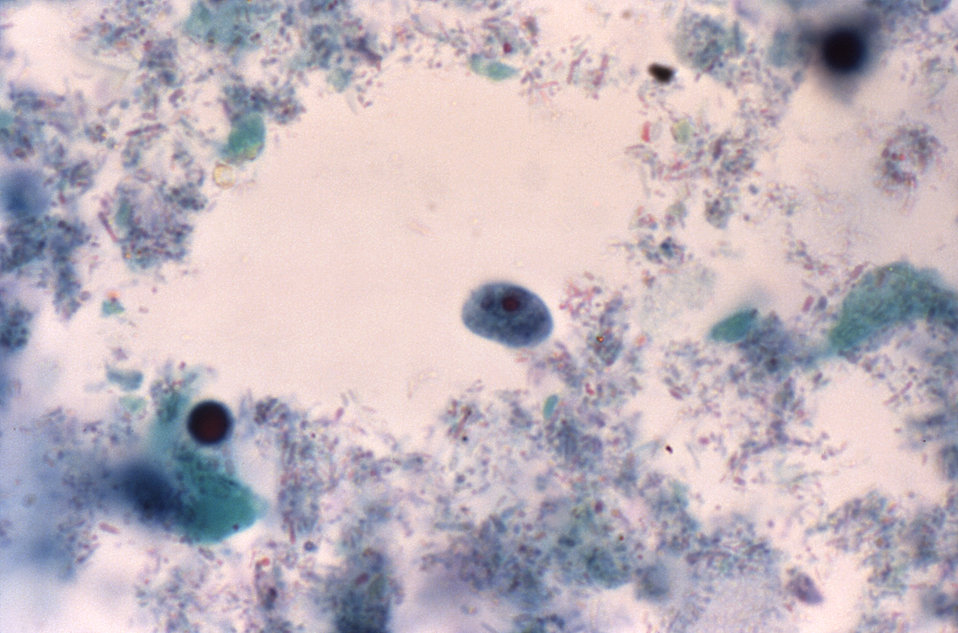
This trichrome-stained photomicrograph revealed the presence of a parasitic Iodamoeba b�ii trophozoite, which contained poorly-visible achromatic granules within its cytoplasm.